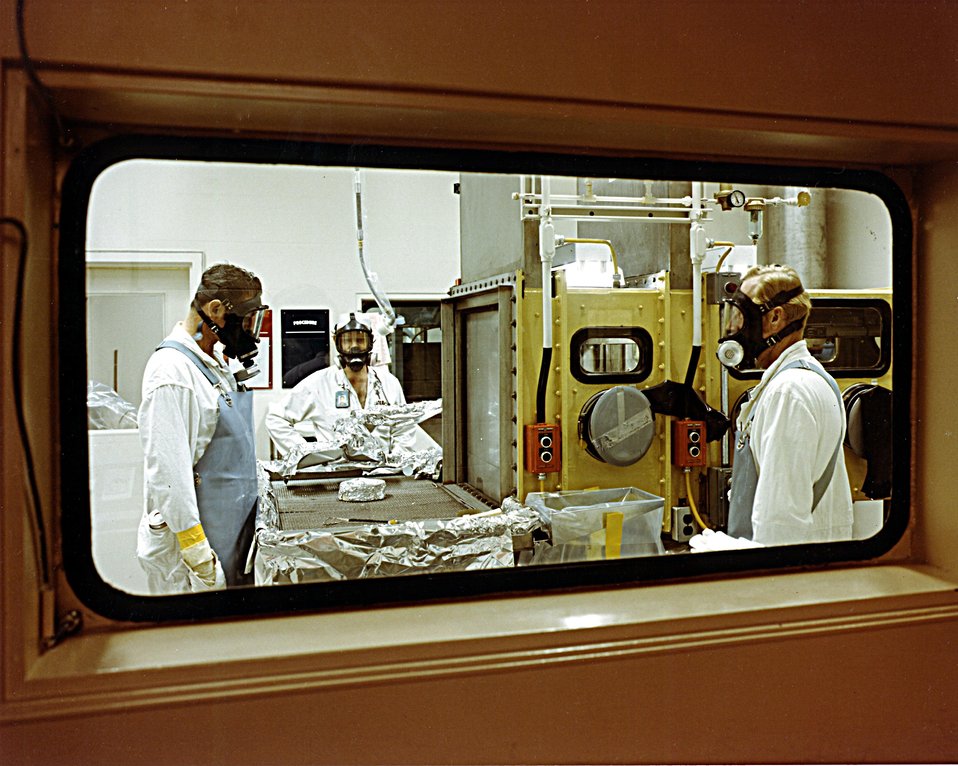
WORKERS ARE ASSEMBLING COMPONENT PARTS FOR NUCLEAR TRIGGERS.

ALL PLUTONIUM OPERATIONS AT THE PLANT ARE CARRIED OUT IN HIGHLY SPECIALIZED FACILITIES, PROTECTING THE EMPLOYEES AND THE SURROUNDING POPULATION AND ENVIRONMENT. THIS ROOM IS EQUIPPED WITH A DOWN DRAFT AIR SYSTEM FOR PROTECTION OF THE WORKERS, WHO ALSO WEAR FULL FACE MASKS. THIS IS THE FINAL ASSEMBLY PROCESS.